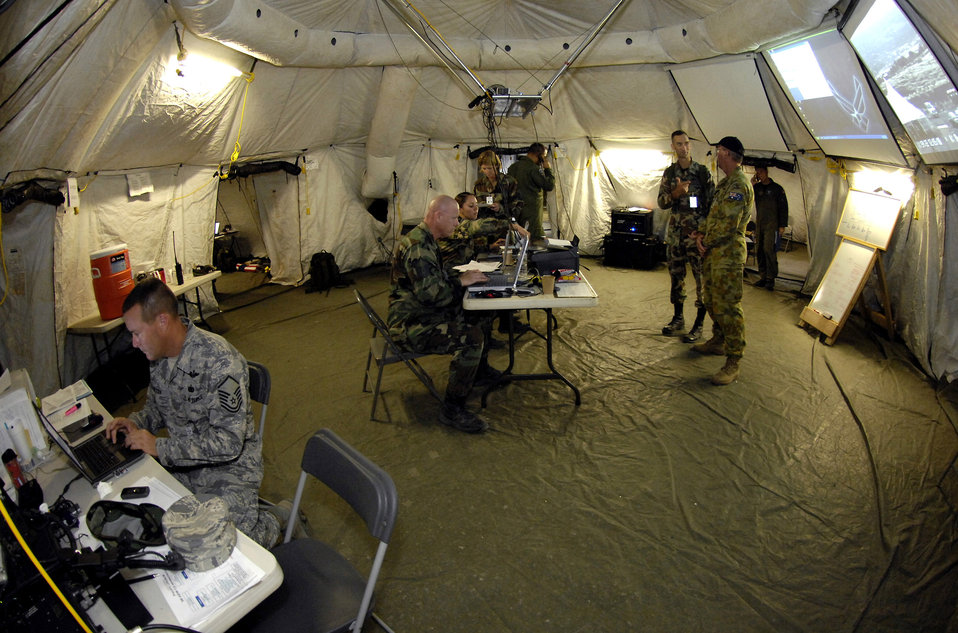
Providing a lifeline

Members from the 36th Contingency Response Group man the tactical operation center during Exercise Pacific Lifeline Feb. 5 at Kona International Airport, Hawaii. Pacific Lifeline is a total force exercise staging from three locations within the Hawaiian Islands. It provides approximately 900 Department of Defense members a test environment to rapidly deploy and provide time-critical services in the wake of a simulated natural disaster.